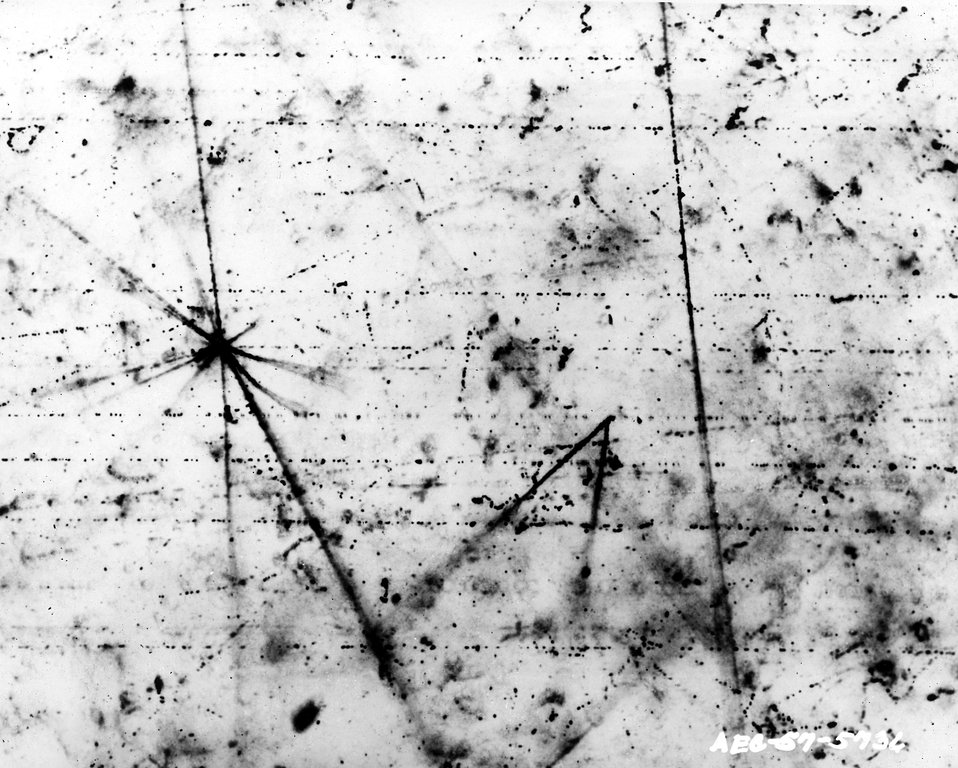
Photographic plate, or emulsion, exposed to billion-volt protons produced by the Cosmotron at Brookhaven National Laboratory. c. 1957